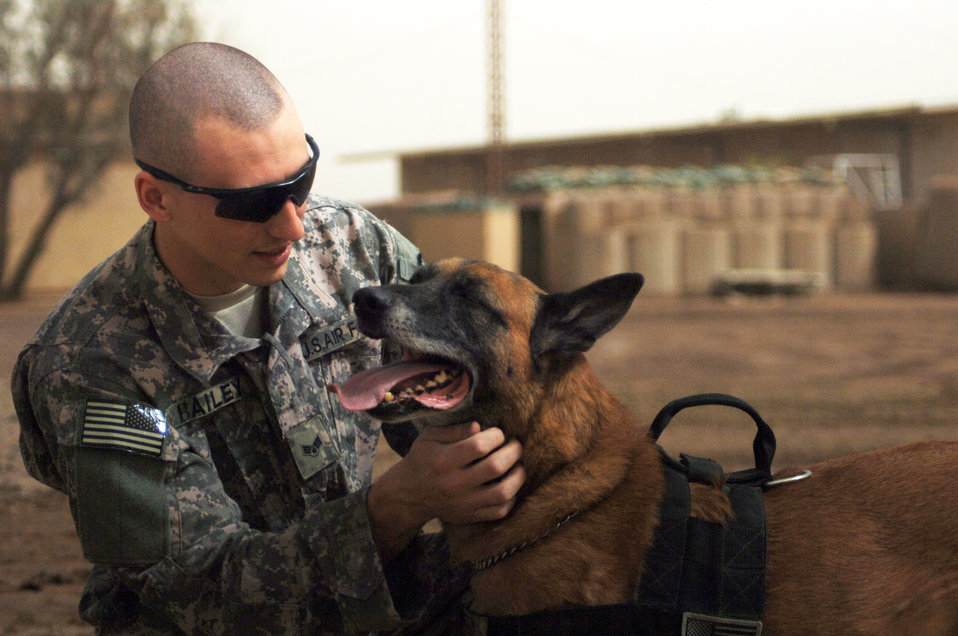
K-9, handler work together to keep servicemembers safe

Senior Airman William Bailey praises Robby, his nine-year-old Belgian Malinois, after he successfully completed an obstacle course as part of daily training at Camp Taji, Iraq. Airman Bailey is a military working dog handler attached to the Army's 1st Calvary Division.